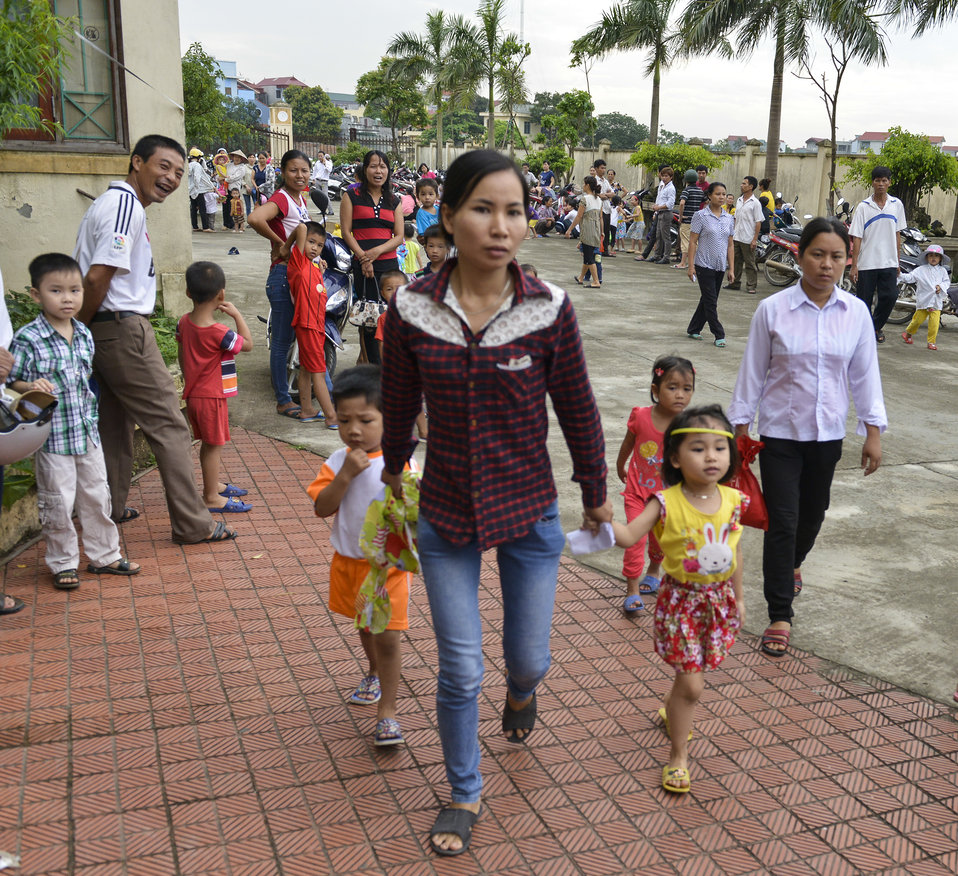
Eye screening for kindergarten children in Quoc Oai district of Hanoi

Quoc Oai, Hanoi. May 31, 2014.